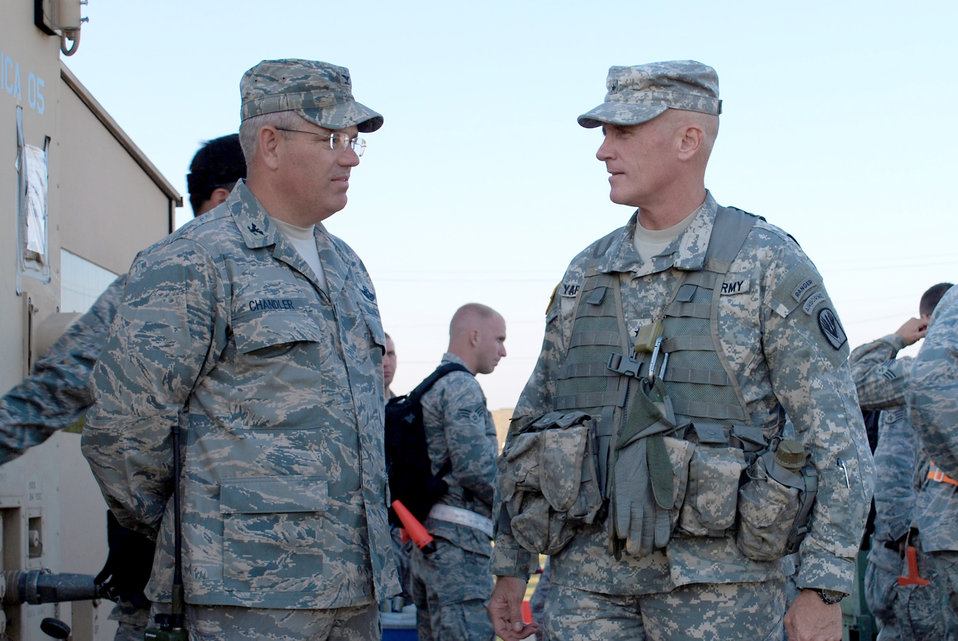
615th CRW P

Col. David Chandler discusses operations with Brig. Gen. James Yarbrough during a Joint Readiness Training Center exercise Oct. 18 at Alexandria International Airport in Lousiana. Colonel Chandler is the 570th Contingency Response Group commander and General Yarbrough is the Joint Readiness Training Center commander.